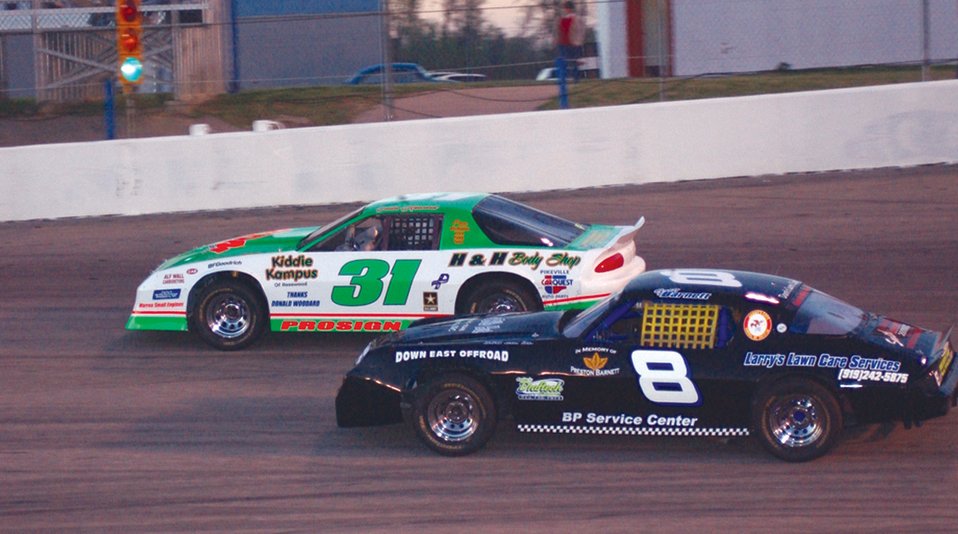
Airman spends free time living only way he knows -- fast

KENLY, N.C. -- Master Sgt. Warren Howard pushes his No. 31 car past a competitor to finish fifth during a race recently at the Southern National Speedway here. He has raced cars since he was 16 years old and is the environmental coordinator with the 4th Equipment Maintenance Squadron.